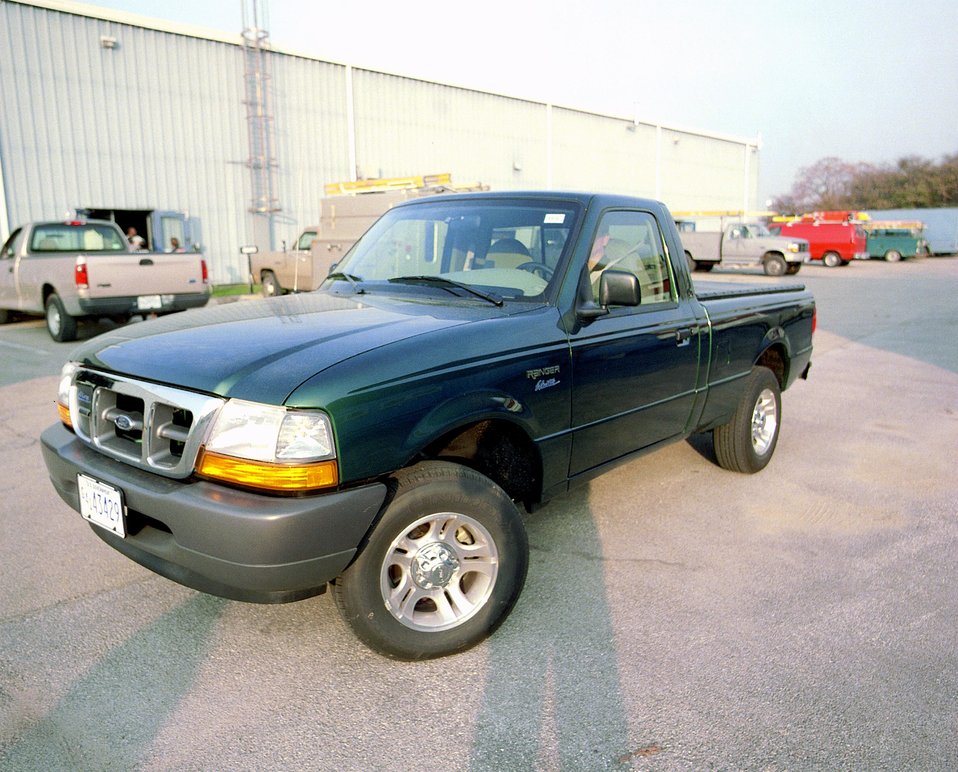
AN ELECTRIC RANGER ZERO EMISSION VEHICLE USED AT FERMILAB.

IN ORDER TO CUT DOWN ON THE USE OF PETROLEUM BASED FUELS, FERMILAB IS DEVELOPING A FLEET OF VEHICLES WHICH INCLUDES ELECTRIC VEHICLES AND ALTERNATIVE FUEL VEHICLES. SHOWN IS AN ELECTRIC FORD RANGER ZERO EMISSION VEHICLE.